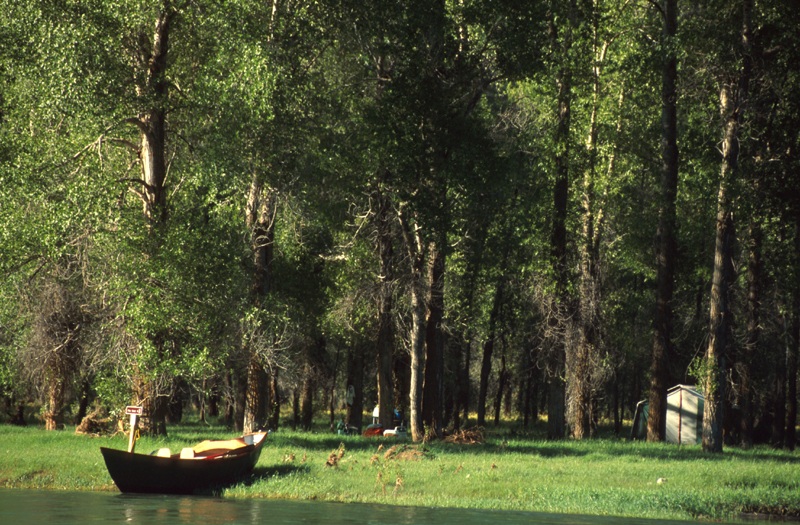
South Fork of the Snake River